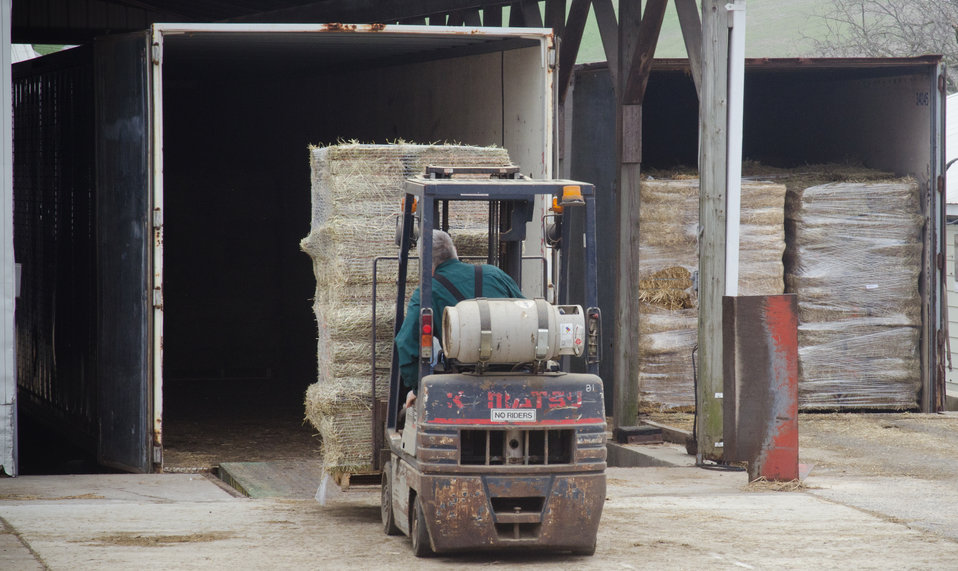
A pallet of compressed hay bales is loaded into a trailer for delivery to an international customer at Heidel Hollow Farms. In Germansville, PA. on Wednesday, April 20, 2011. A family owned farm since 1852 is an 1,800 acre operation. They mainly produce and compact hay for export and grow produce on 300 acres for local sale. With the financial help of the U.S. Department of Agriculture (USDA) the hay compactor’s diesel engines were replaced with clean low-maintenance, low operating cost electric motors to power the compactor's hydraulic system. The compactor increases the density of baled hay by two and half times for more efficient shipping to overseas customers.